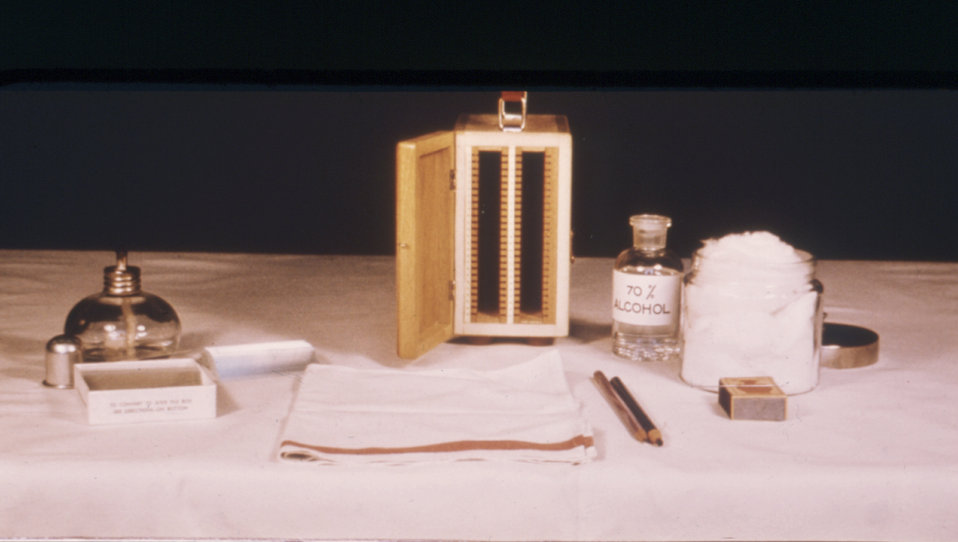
This photograph depicts the lab supplies used in making thick and thin blood films.